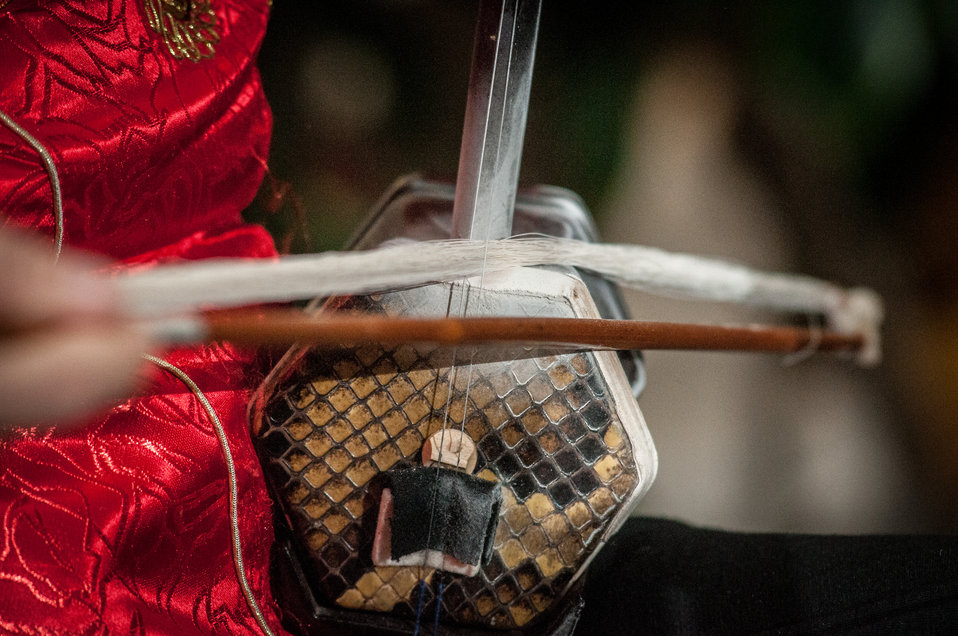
The Washington Chinese Traditional Orchestra Ensemble performs 'Melody of Purple Bamboo,' 'Jasmine Flower,' and 'Joys of Beaming,' during the U.S. Department of Agriculture (USDA) Asian Pacific American Heritage Month Observance, at the USDA headquarters, Whitten Building patio, in Washington, D.C., on Thursday, May 23, 2013. This year’s theme is “Building leadership; Embracing the Cultural Values and Inclusions.”